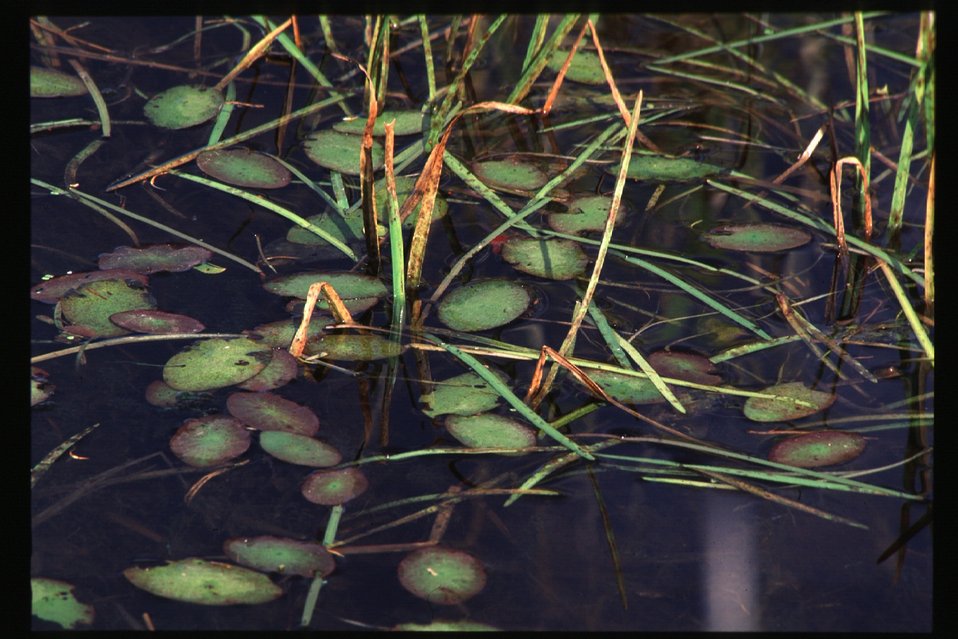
Scenic Gamlin Lake Couer d'Alene Field Office UCSC Upper Columbia Salmon Clearwater District